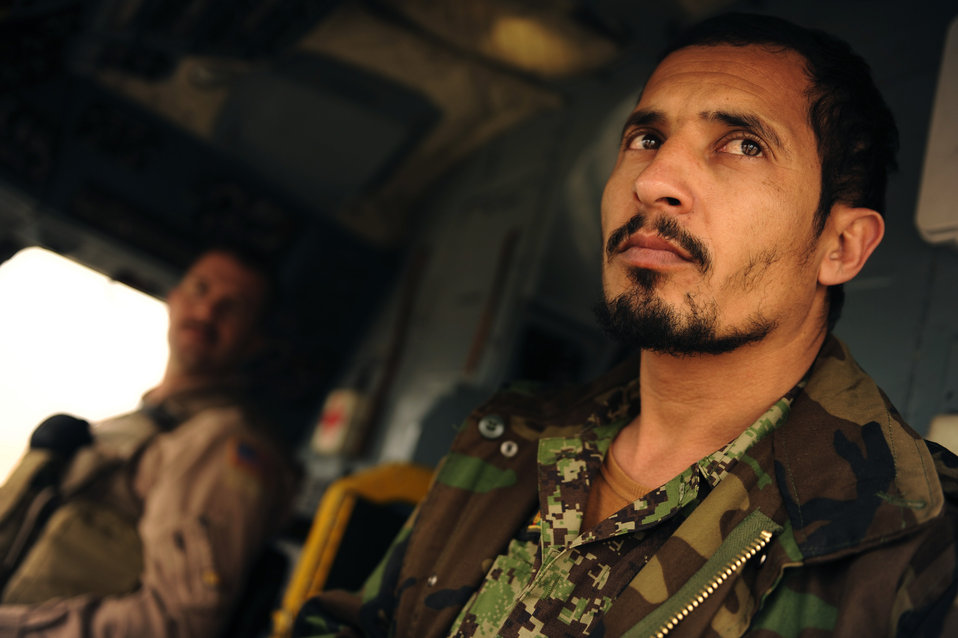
Afghan Mi-17 Pilot Training

Afghan air force 1st Lt. Ehsanullah waits to take off aboard an Mi-17 with his instructor, Maj. Drew Grigson, Jan. 10, 2011, at Shindand Air Base, Afghanistan. Shindand AB officials host a pilot training program taught by Airmen from the 444th AEAS. Major Grigson is from the 444th Air Expeditionary Advisory Squadron.